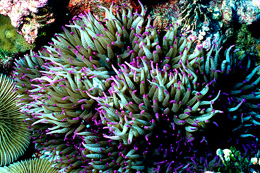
Sea Anemone - Kingman Reef NWR

The reefs at Kingman Reef NWR support spectacular coral diversity and an abundance of anemones on it's lagoon reefs.